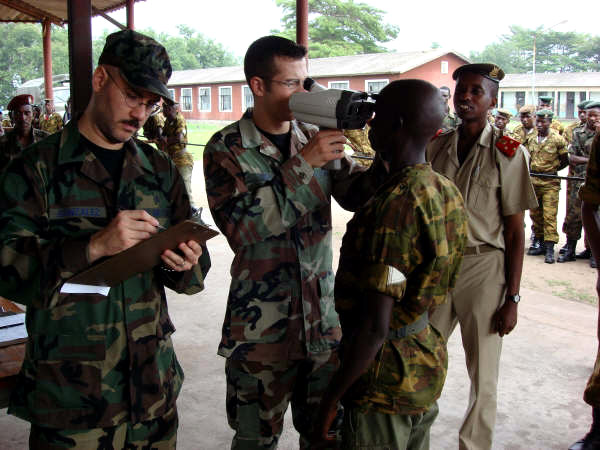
Airmen provide optometry care to deploying African troops

Tech. Sgt. Luis Gonzales and Senior Airman Dale King perform a preliminary test on a troop at Gakumbu military base, Africa. The Airmen were part of a team sent to povide optometry and eye care Nov. 6 to 15 to two battalions from the Burundi, Africa, military who were preparing to deploy on a peacekeeping mission to Somalia. Sergeant Gonzales is assigned to the 52nd Aerospace Medicine Squadron at Spangdahlem Air Base, Germany, and Airman King is assigned to the 435th Aerospace Medicine Squadron at Ramstein Air Base, Germany.